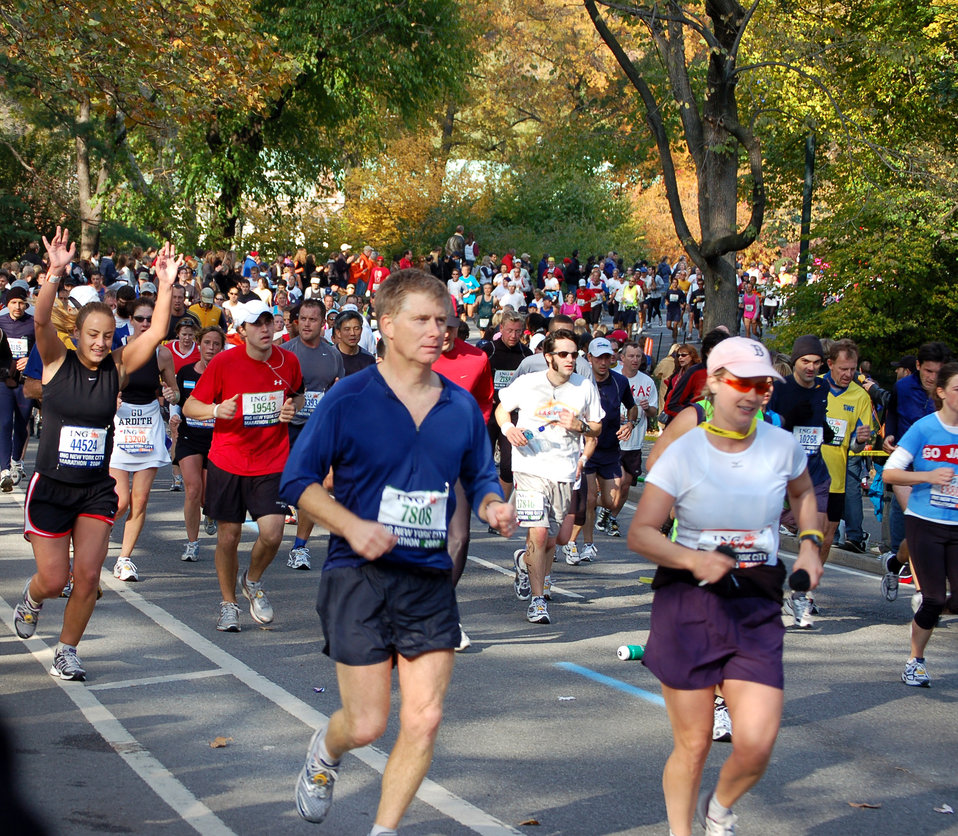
Achilles Freedom Team

A mass of marathoners pass mile 25 of the New York City Marathon Nov. 5.